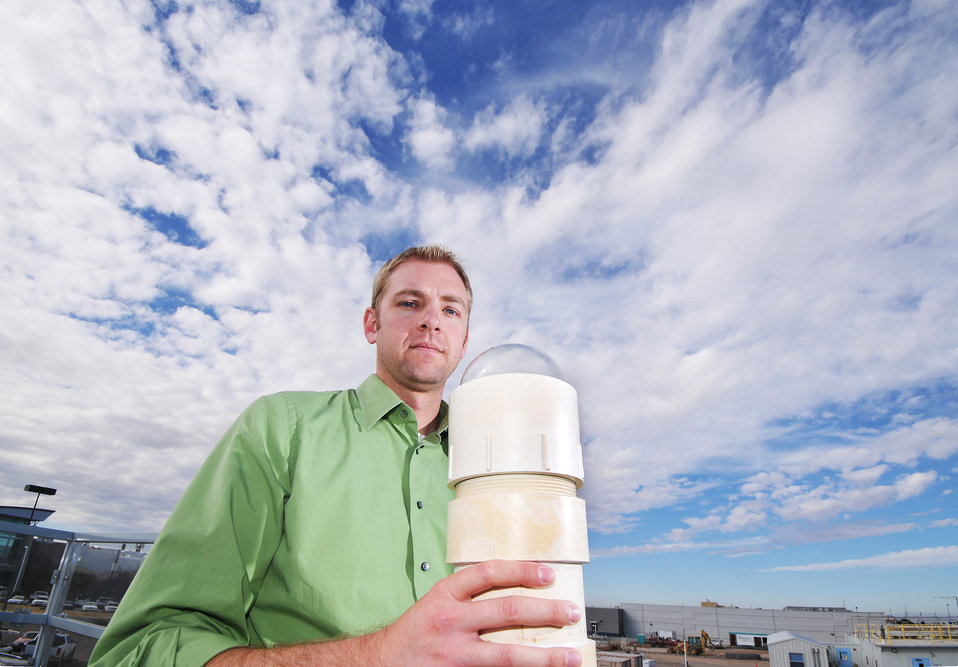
SANDIA RESEARCHER CHECKS OUT A SENTINEL NETWORK ALL-SKY VIDEO CAMERA SYSTEM PRIOR TO INSTALLATION AT SANDIA'S LAZAP FACILITY.

A Sentinel system consists of a small, inexpensive black-and-white video camera equipped with a fisheye lens, with digitized video fed to a PC. Nearly 100 Sentinel systems are deployed and monitored by volunteers in 11 states and five Canadian provinces.